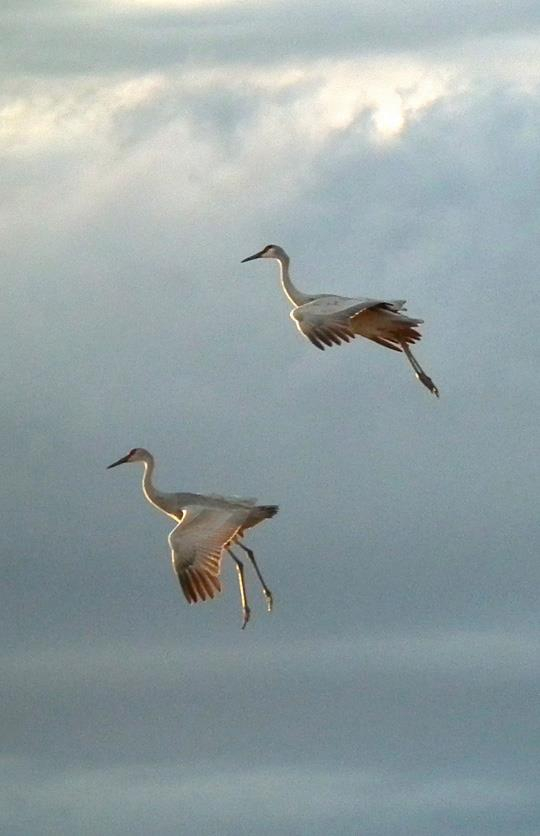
sandhill cranes arrive at Bosque del Apache NWR

Bosque del Apache National Wildlife Refuge, NM
October 24, 2011